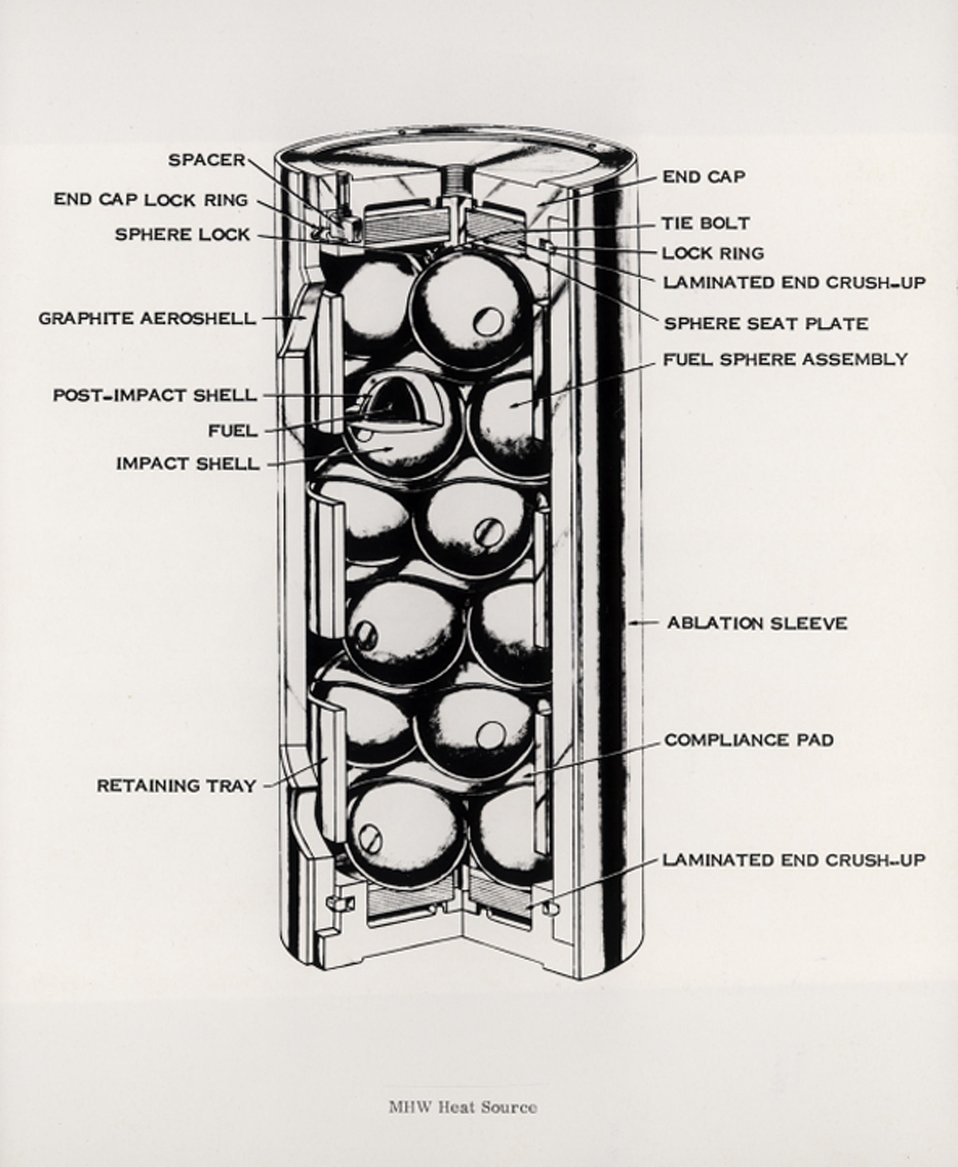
Multi-Hundred Watt nuclear generators will provide power for the Voyager 1 and the Voyager 2 spacecraft for launch summer 1977.